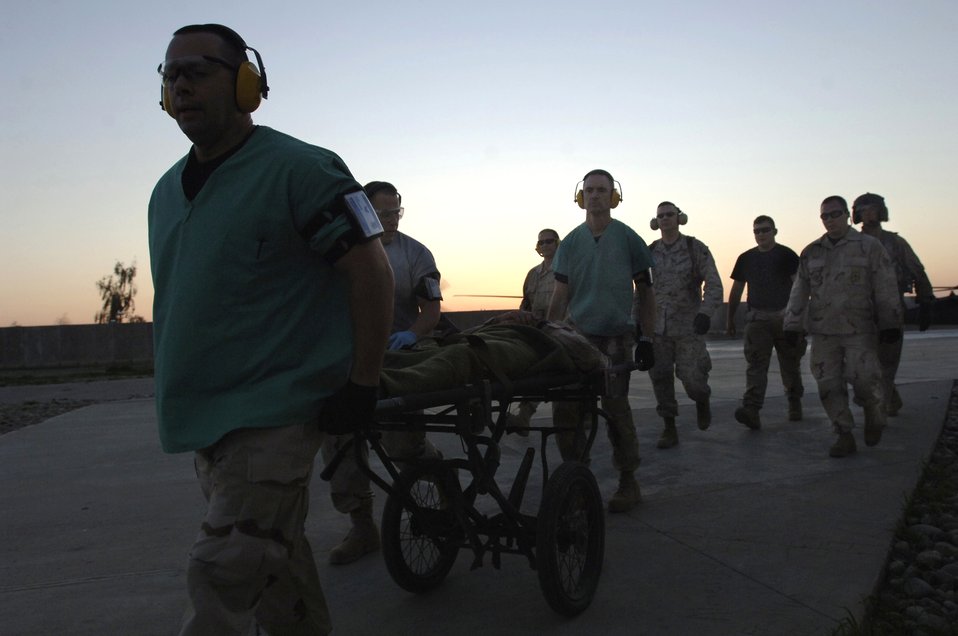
A hospital for heroes

Medics transport a patient toward the Air Force Theater Hospital at Balad Air Base, Iraq. As nightfall approaches, 39 patients had been treated at the hospital that day. The medical facility, protected by towering barriers, is has a survival rate of 98 percent.